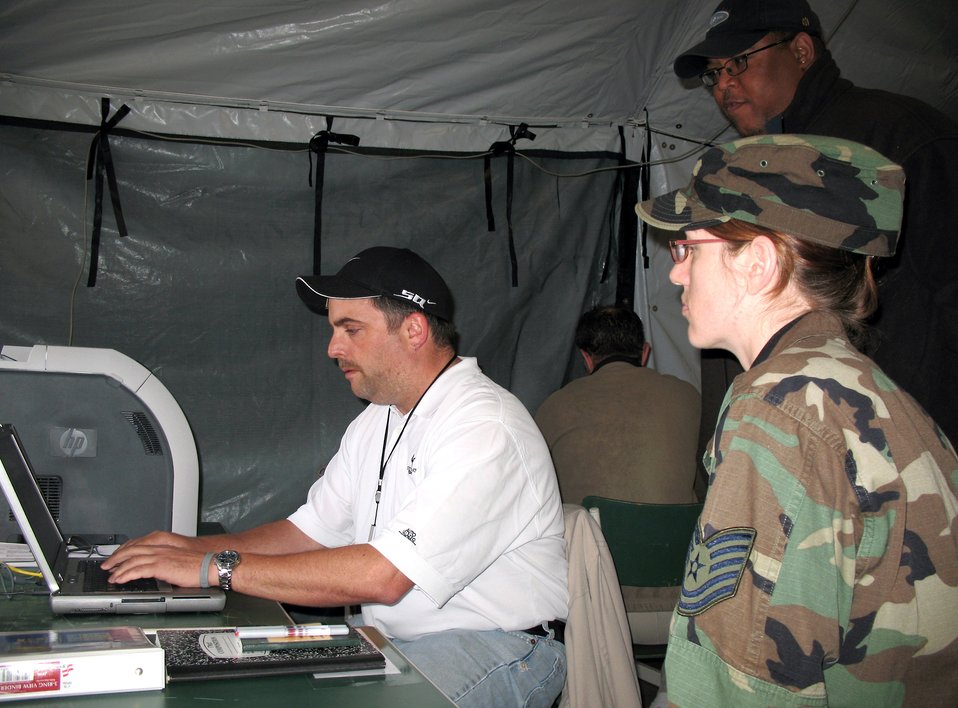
Nations at Combined Endeavor combat cyberspace security

Tech. Sgt. Wendee Marshall observes Scott Thomas (sitting) and Quintin Quinn as they build a tool to share data among nations during the Combined Endeavor 2007 exercise held in Baumholder, Germany. Combined Endeavor is the largest security cooperation and communications and information systems military exercise in the world, with more than 1,200 military and civilian personnel from 42 countries and two multinational organizations. Sergeant Marshall is assigned to the 1st Combat Communications Squadron at Ramstein Air Base, Germany.